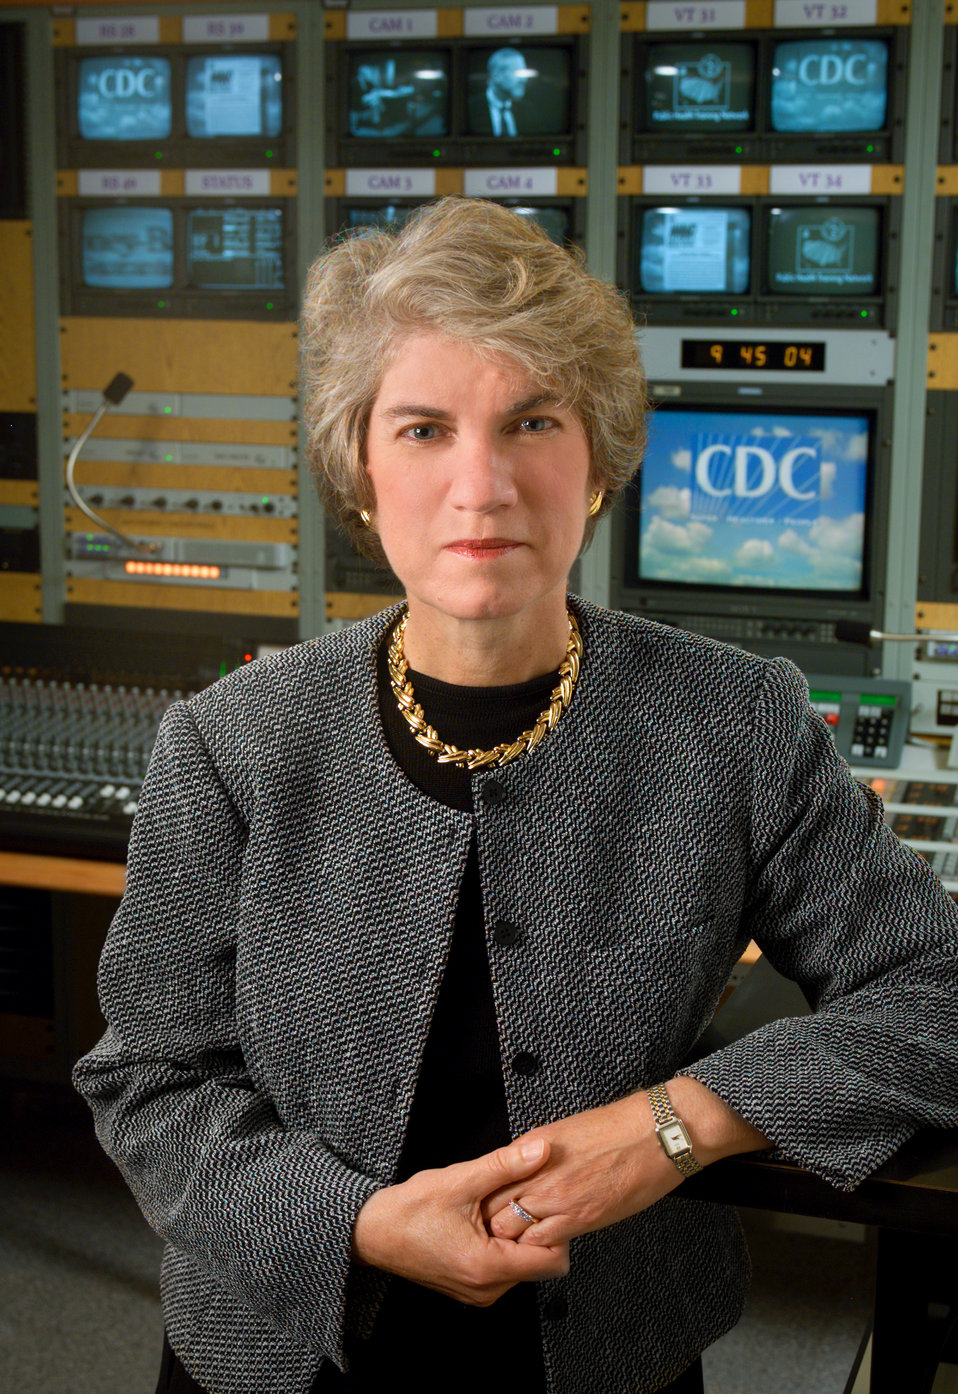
This is Marsha Vanderford PhD, Acting Associate Director for Communication, Office of Communications.